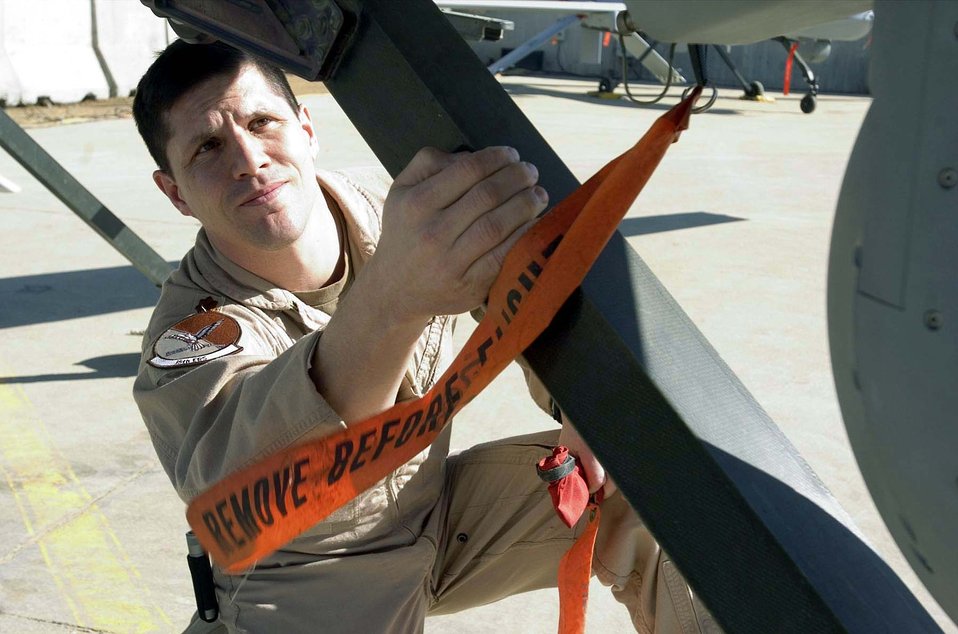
Predators protect troops

BALAD AIR BASE, Iraq -- Maj. Michael Bruzzini inspects an RQ/MQ-1 Predator unmanned aerial vehicle here. He is the 46th Expeditionary Reconnaissance Squadron commander